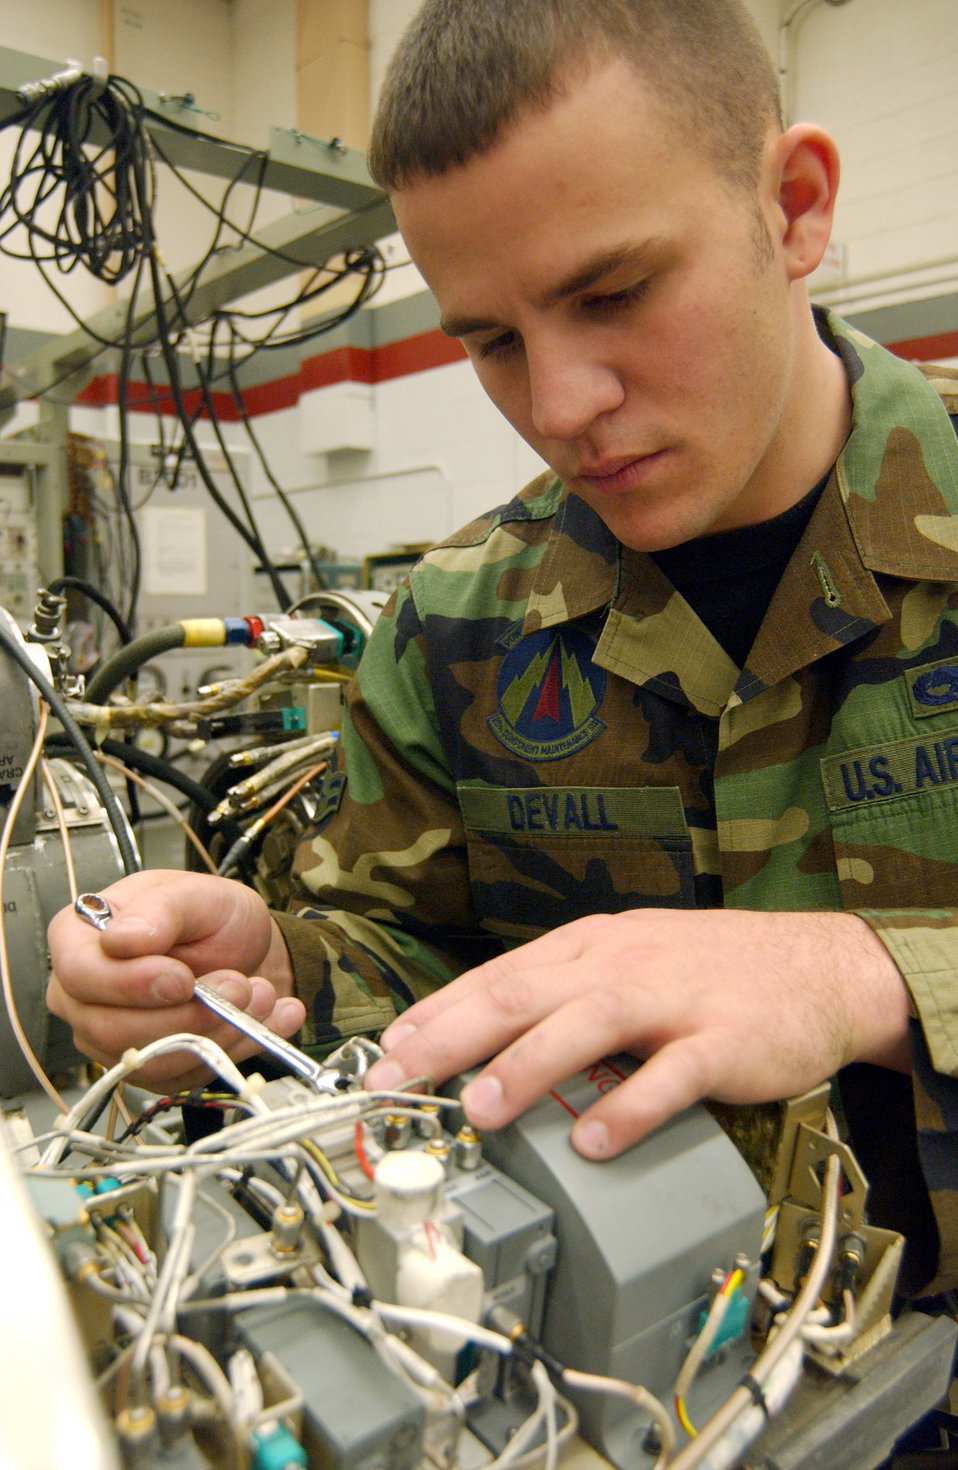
All Systems Go

SHAW AIR FORCE BASE, S.C. -- Airman 1st Class Jeffrey Devall performs maintenance on an electronic countermeasures pod here Dec. 4. Devall an electronic warfare systems team member of the 20th Component Maintenance Squadron.